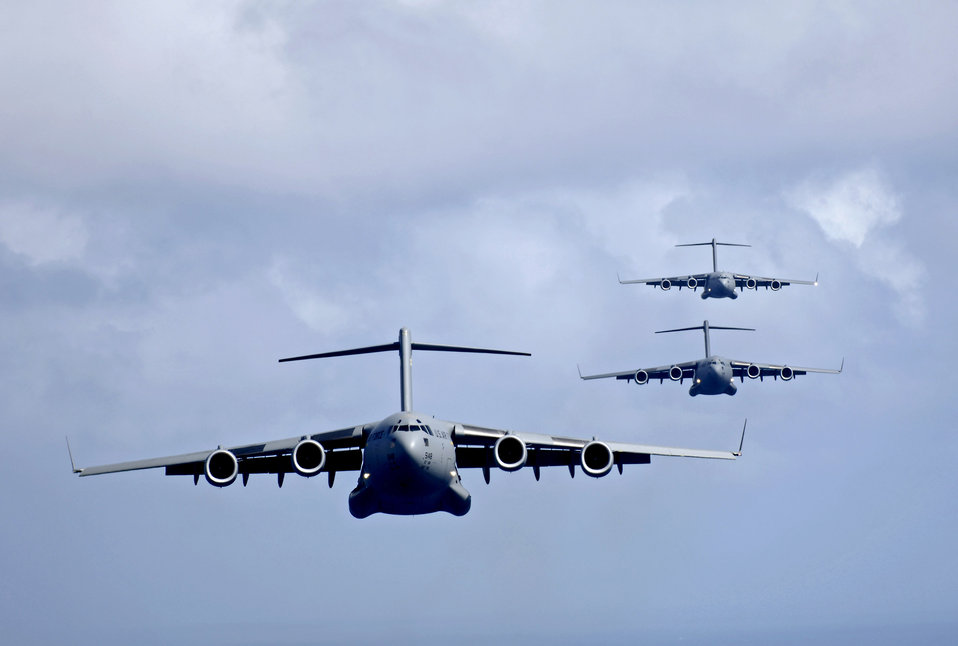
Hickam Airmen conduct 4-ship C-17 airdrop training

C-17 Globemaster IIIs participate in a four-ship, airdrop training mission Aug. 13 over the island of Oahu, Hawaii. The C-17s are assigned to the from the 535th Airlift Squadron from Hickam Air Force Base, Hawaii. The 535th AS aircrews conducted the multi-element training to maintain currency and proficiency.